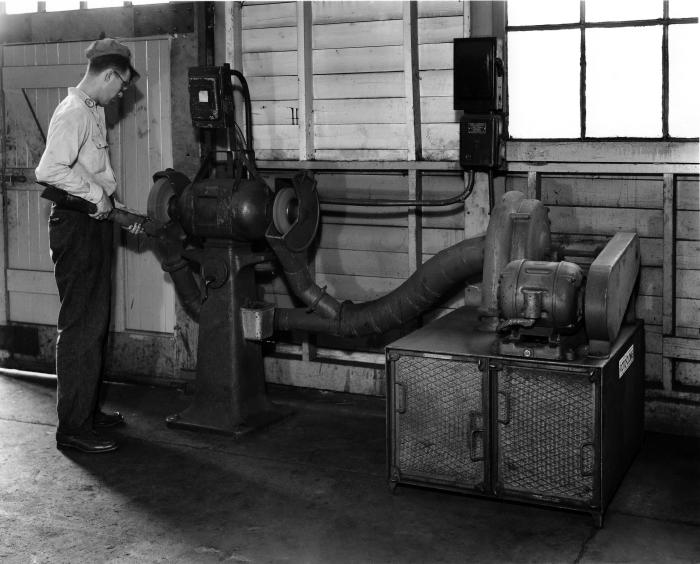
From approximately 1940, this historical photograph, which had been photo-retouched prior to printing, was provided by the Center for Disease Control's (CDC), National Institute for Occupational Safety and Health (NIOSH), and depicted a worker grinding metal on a machine equipped with a Roto-Clone� ventilation device. This Louisville, Kentucky facility was part of the American Air Filter Company. In the 1940s and 1950s, the Industrial Hygiene Division (IHD) investigated hazards associated with activities such as metal grinding. It was in scenarios such as this where there existed the potential for worker health problems associated with industrial metal grinding, including respiratory and dermatologic hazards from inhalation and contact with fungi- and bacteria-contaminated synthetic metal-working fluids, oil mists, and grinding dust in the machining areas.